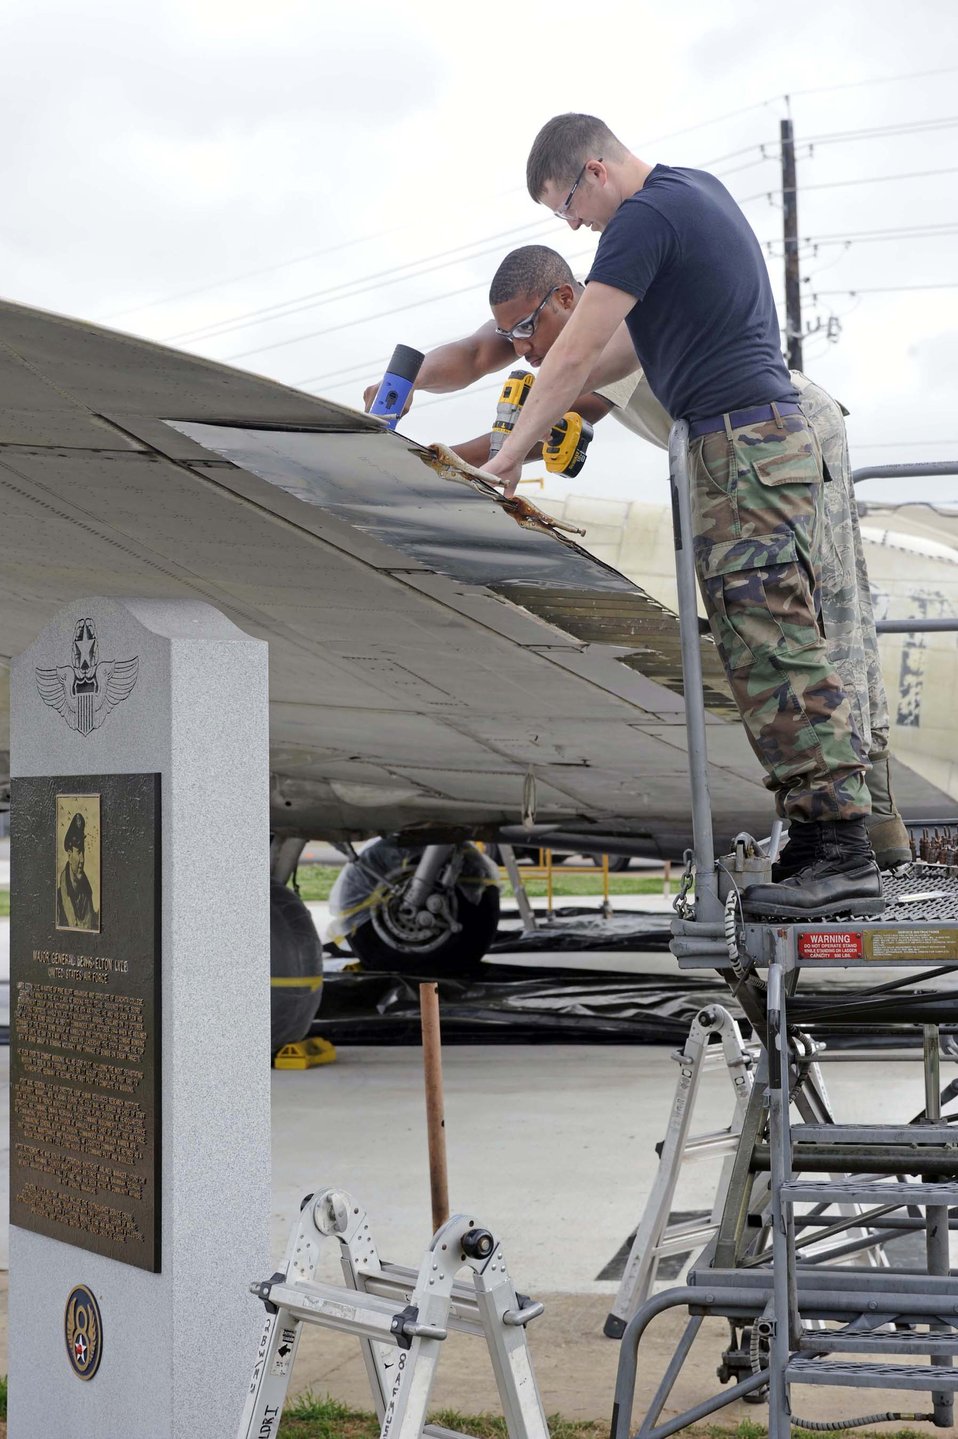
Barksdale Airmen restore B-17G for 8th Air Force museum

Airmen 1st Class Bronson Bohannon (right) and Avondries Green install rivets on new sheet metal wing flaps April 5, 2010, at Barksdale Air Force Base, La. Airmen Bohannon and Green are 2nd Maintenance Squadron aircraft structural maintainers.